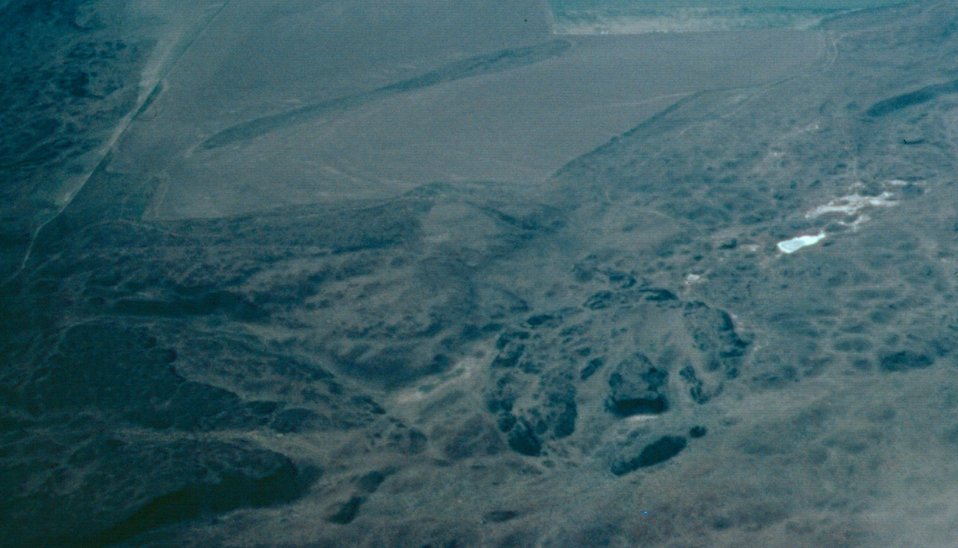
Aerial view of ring dikes in basalt Four Rivers LSRD Lower Snake River District